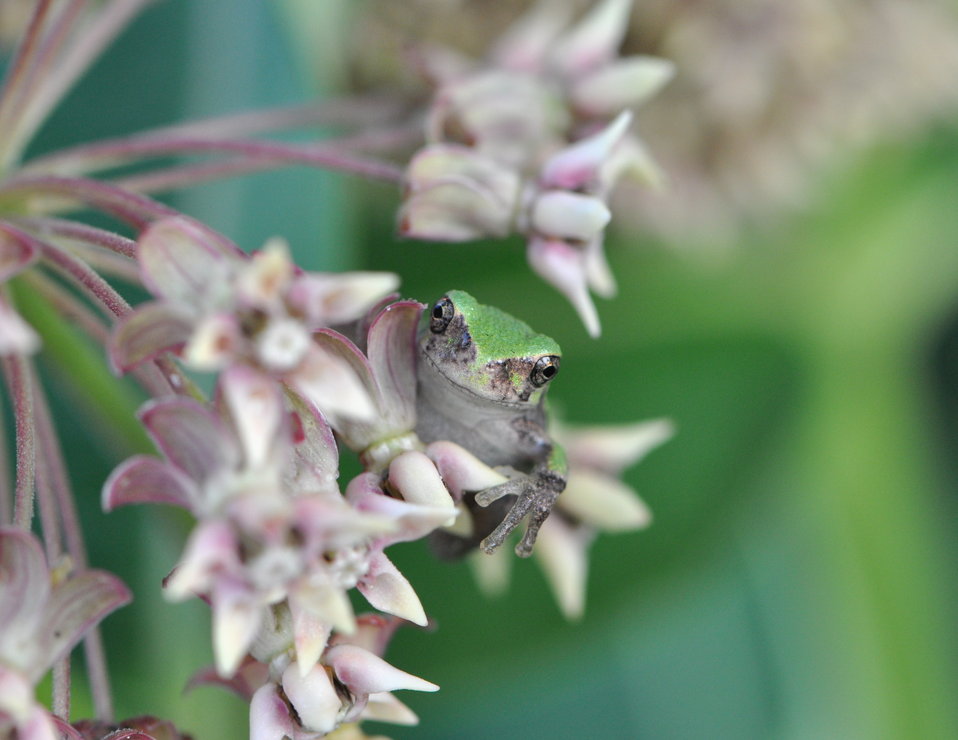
Eastern Gray Treefrog at Horicon National Wildlife Refuge